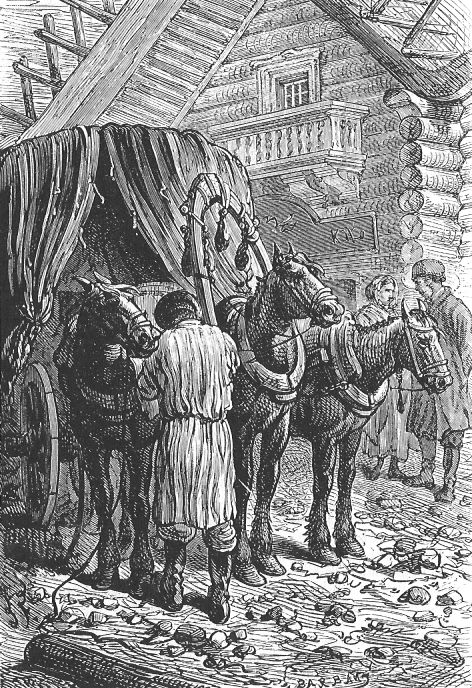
An illustration from the novel 'Michael Strogoff: The Courier of the Czar' by Jules Verne drawn by Jules Férat. Polski: Ilustracja powieści Juliusza Verne'a 'Michał Strogow, kurier carski' autorstwa Julesa Férata. Français : 'Michel Strogoff. Le courier du tzar', Jules Férat. Français : Une demi-heure plus tard, trois chevaux de poste…